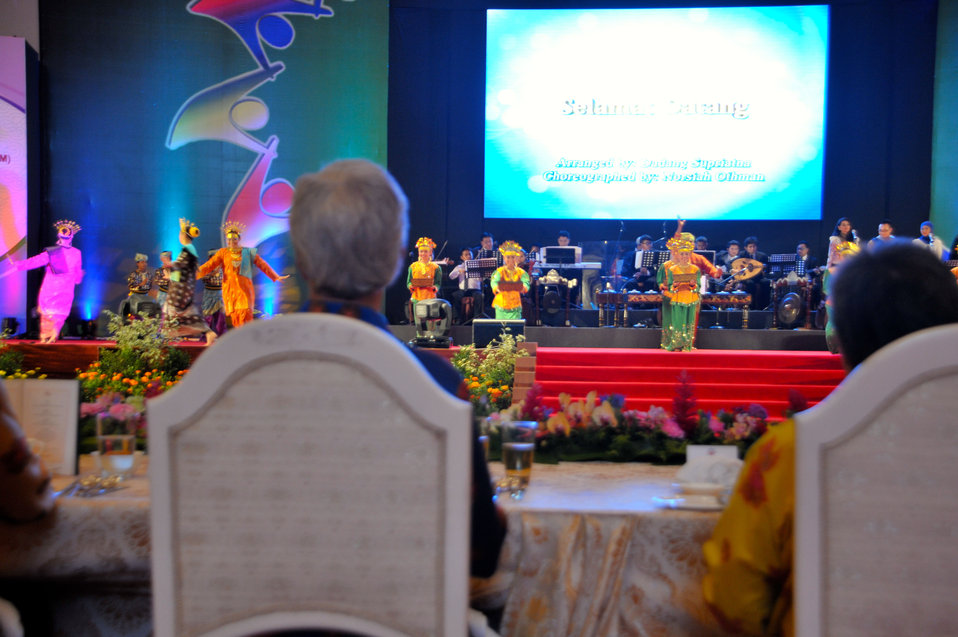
Secretary Kerry Watches the ASEAN Gala Dinner Performance

U.S. Secretary of State John Kerry watches performers in costumes native to Brunei perform during a gala dinner at the ASEAN ministerial meeting in Bandar Seri Begawan, Brunei, on July 1, 2013.